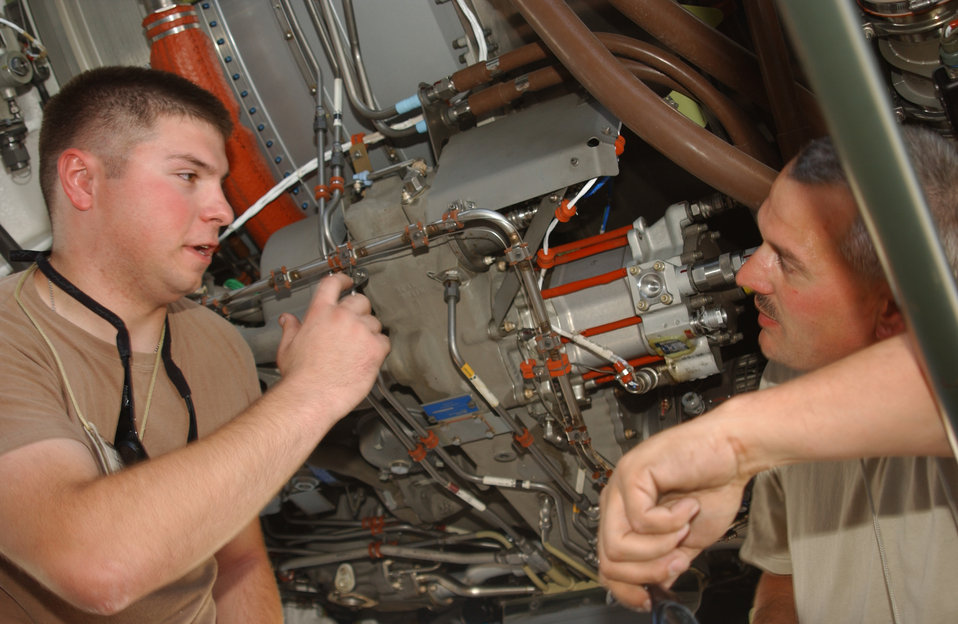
Balad's mission begins with strategic airlift

Airman 1st Class Paul Wrobel asks Staff Sgt. Robert Miller for advice before installing a part on a C-17 Globemaster III engine. They are assigned to the 721st Air Mobility Operations Group, Detachment 5. The Air Mobility Command detachment is responsible for the recovering, marshaling and repair of the C-5 Galaxies and C-17 that land here